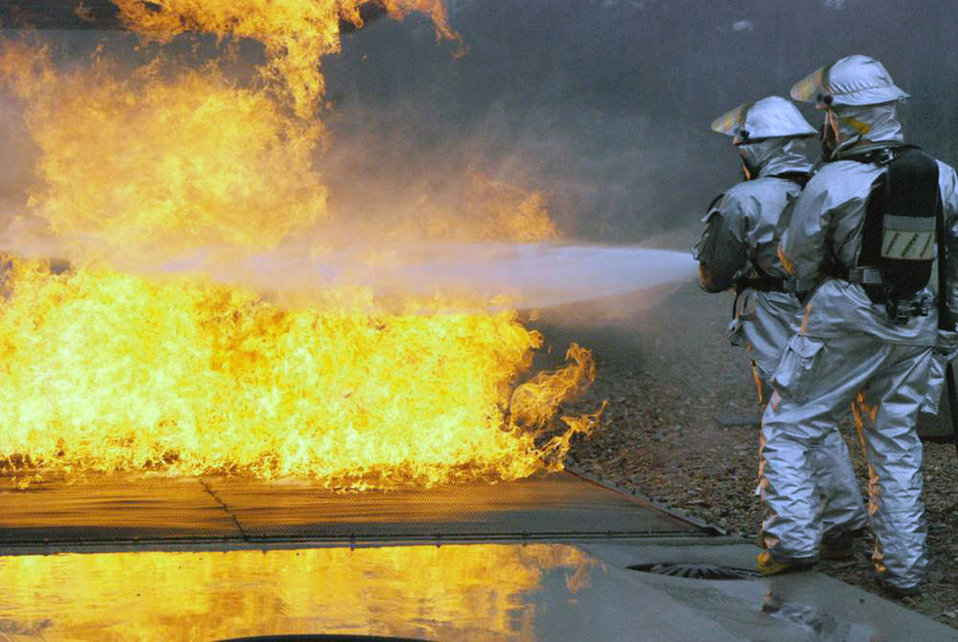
Flames away!

Airmen extinguish a flare up during a training exercise at the Woensdrecht Firefighting Training Facility in the Netherlands. Members of the 309th Airlift Squadron from Chievres Air Base, Belgium, trained on firefighting techniques at the simulator.